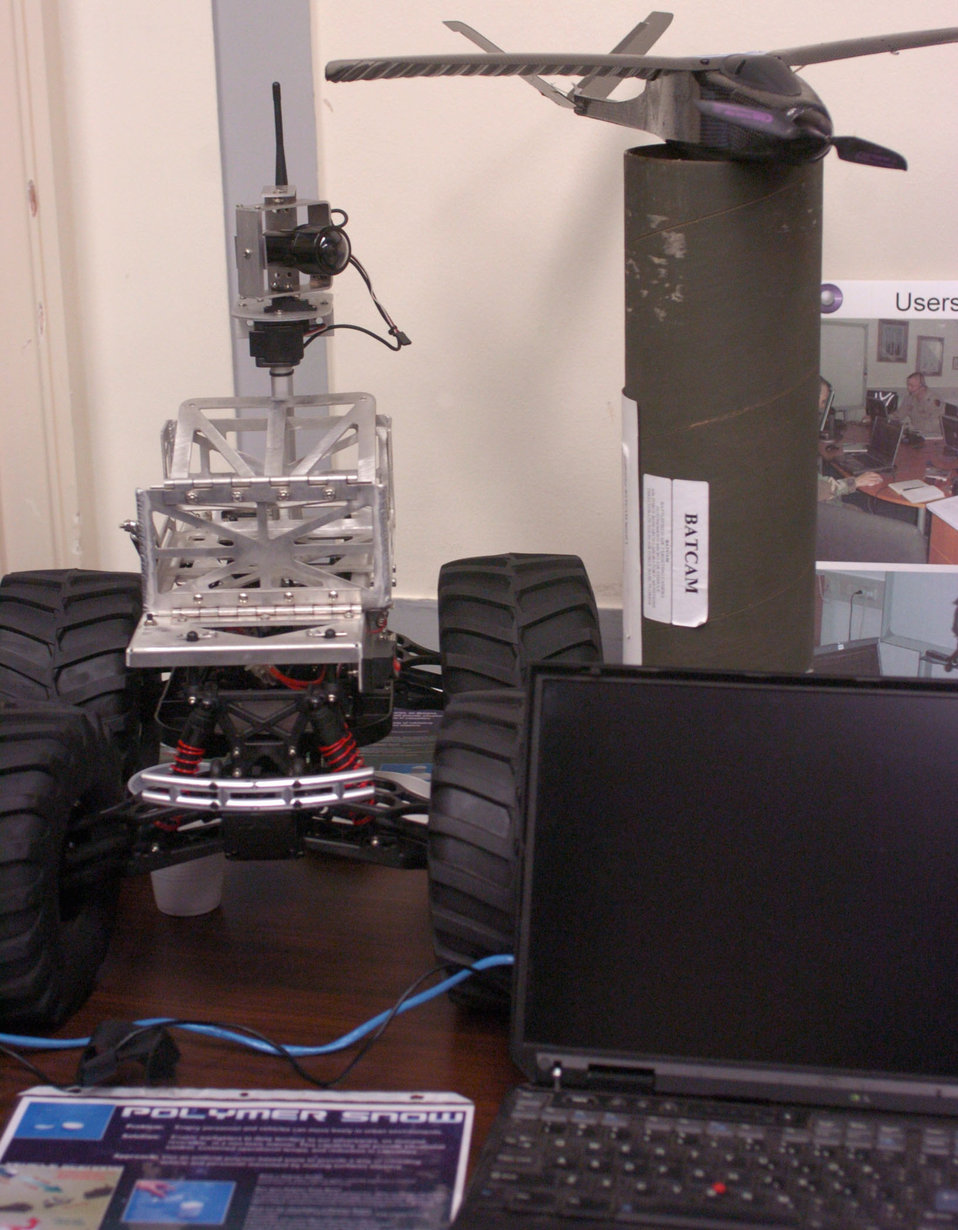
Science, technology help Airmen fight the war on terror

WASHINGTON -- The Batcam unmanned aerial vehicle and the Bombot robot were on display as James Engle testified before the House Armed Services subcommittee on terrorism, unconventional threats and capabilities. He is the deputy assistant secretary of the Air Force for science, technology and engineering.